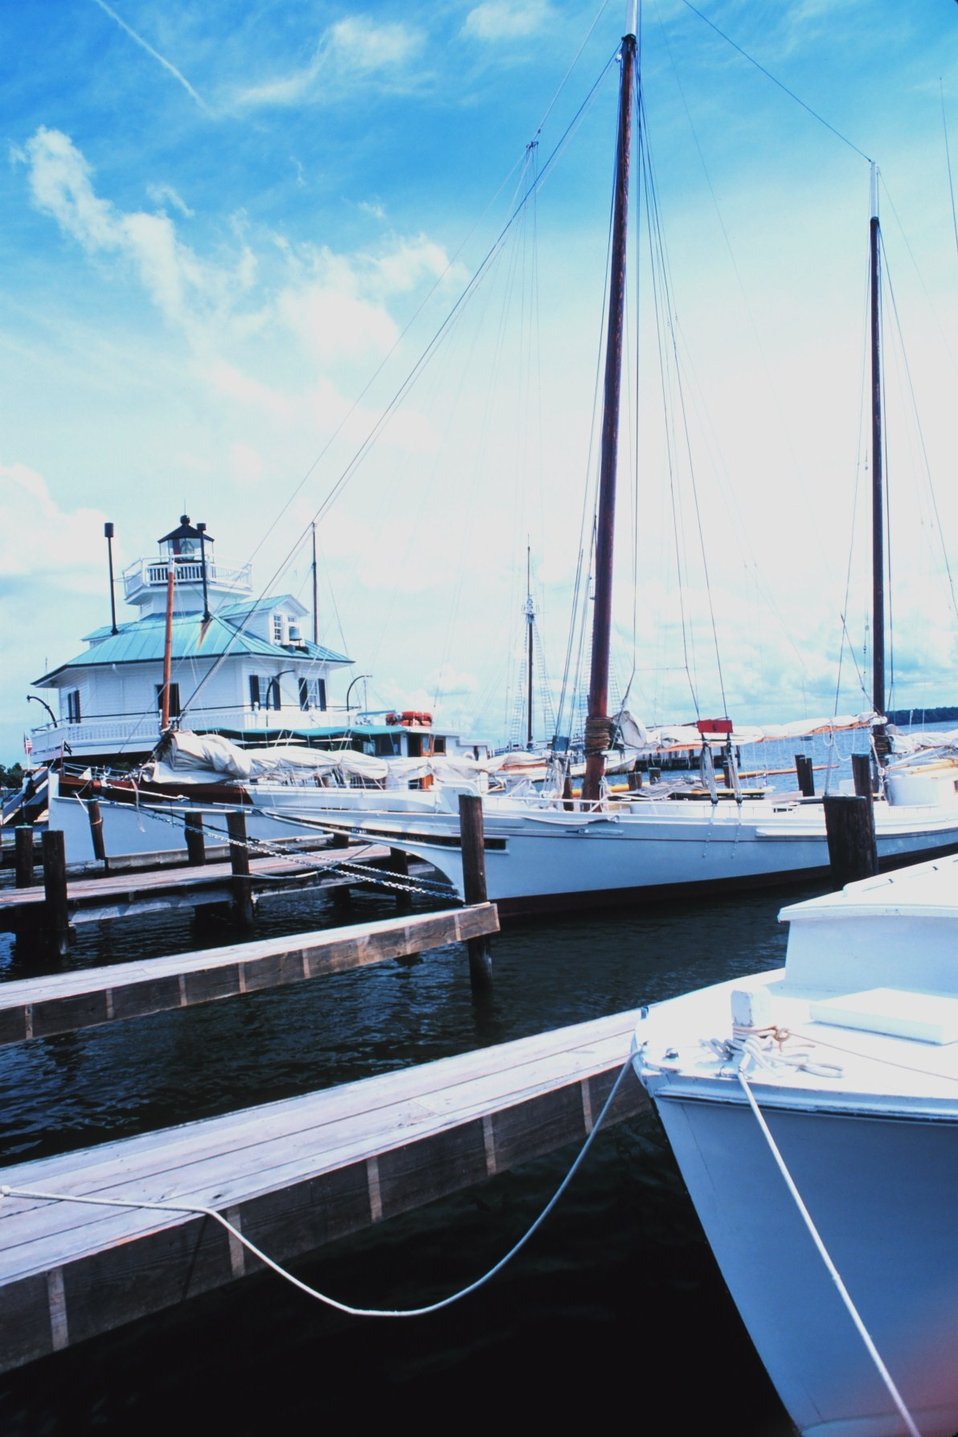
Vessels of the ChesapeakeMaritime Museum at St. Michael's with the Hooper Strait Lighthouse in the background.